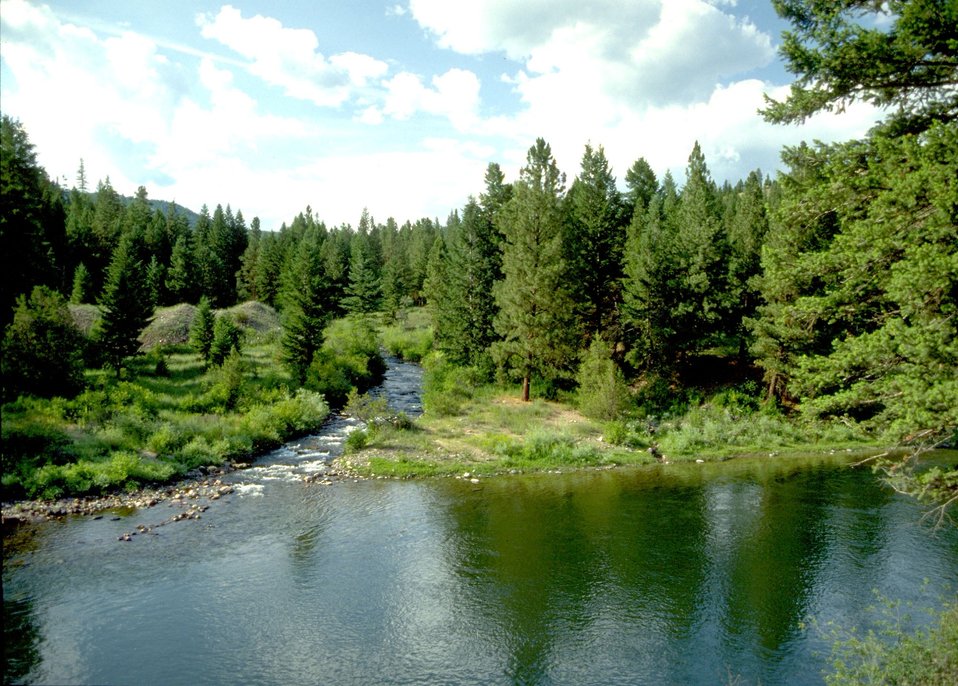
Mouth of Gold creek into Blackffot River